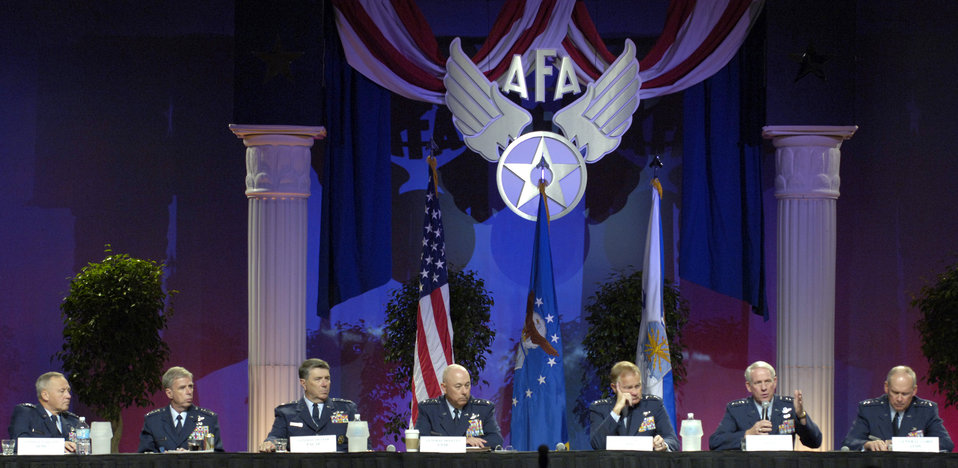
Air and Space Conference 2005

WASHINGTON -- Gen. William R. Looney (second from right), commander of Air Education and Training Command, talks about the effects of hurricane Katrina on Keesler Air Force Base, Miss., during a four star forum moderated by Air Force Chief of Staff Gen. T. Michael Moseley on the second day of the Air Force Association's 2005 Air and Space Conference and Technology Exposition Sept. 13 in Washington, D.C. The panel consisted of (from left) Gen. Bruce Carlson, AFMC; Gen. Robert H. "Doc" Foglesong, USAFE; Gen. Paul V. Hester, PACAF; General Moseley, Gen. Ronald E. Keys, ACC; General Looney; and Gen. Lance W. Lord, AFSPC.